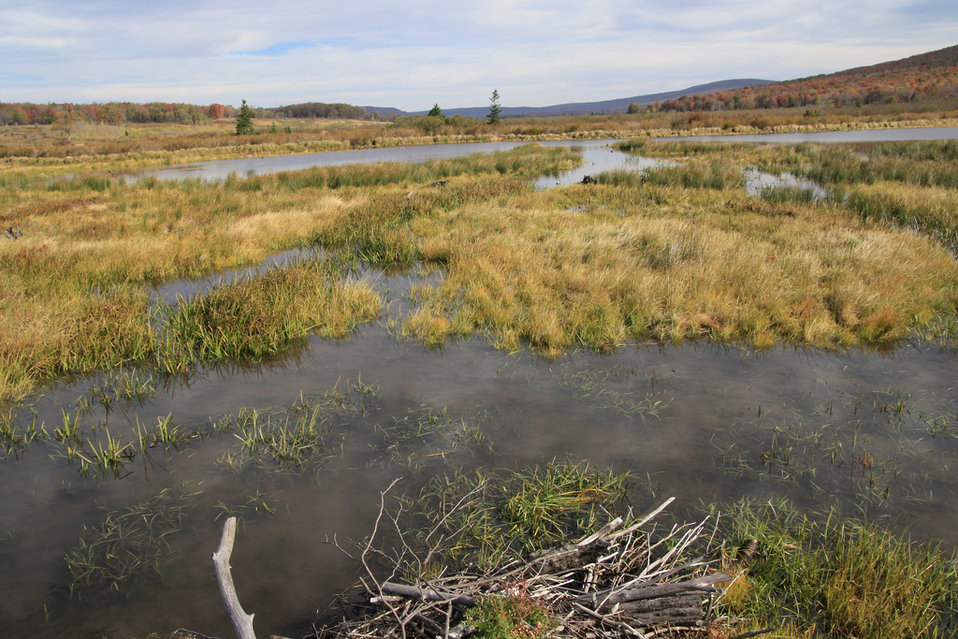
Glade Run Wetlands in Fall